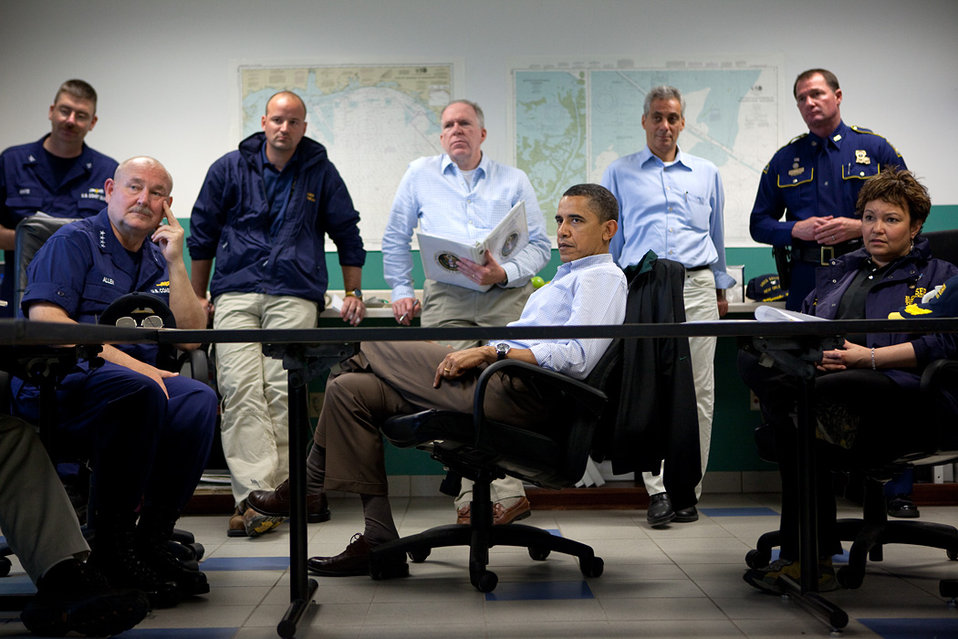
Administration Responds to BP Oil Spill

May 2, 2010 - President Barack Obama is briefed about the situation along the Gulf Coast following the BP oil spill, at the Coast Guard Venice Center, in Venice, La., Sunday, May 2, 2010. Pictured, from left, are U.S. Coast Guard Commandant Admiral Thad Allen, Assistant to the President for Homeland Security and Counterterrorism John Brennan, Chief of Staff Rahm Emanuel, and EPA Administrator Lisa Jackson.